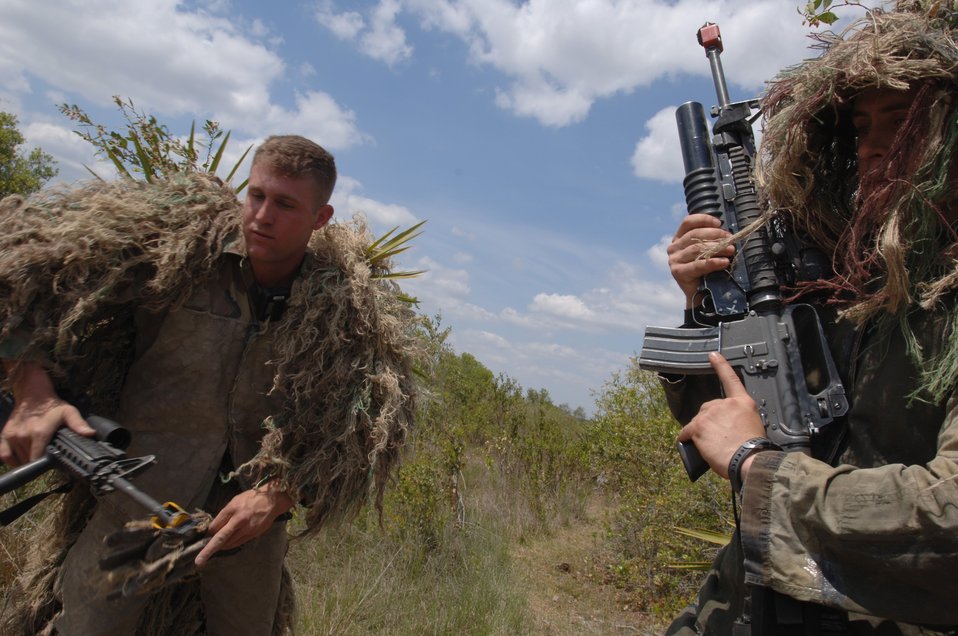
Atlantic Strike III

A reconnaissance team from Fort Hood, Texas, prepares for hostilities Thursday, March 30, 2006, at Avon Park, Fla., during Atlantic Strike III, a joint air and ground training event.